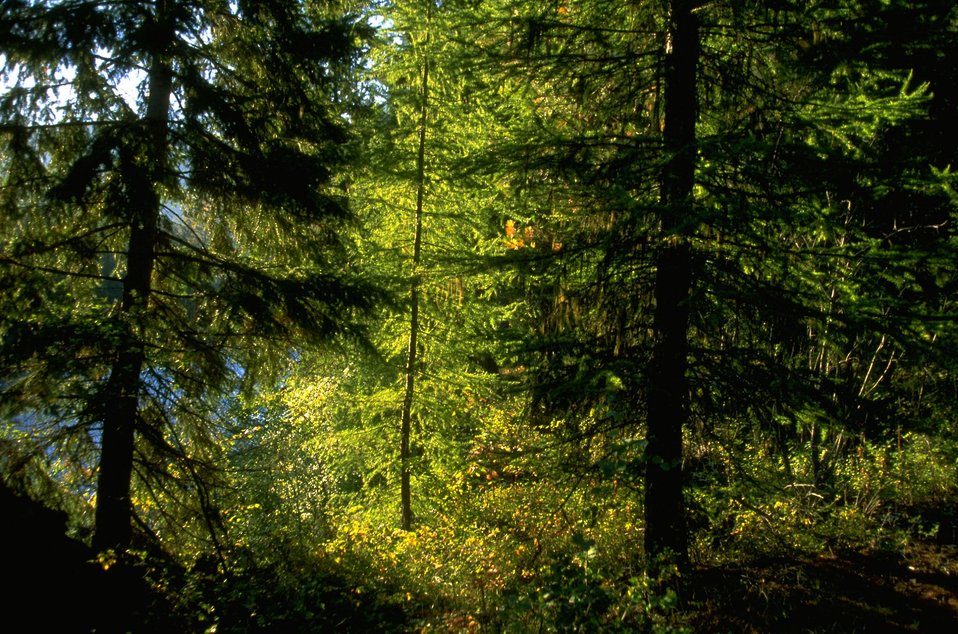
Forest/timber stand along the Blackfoot River